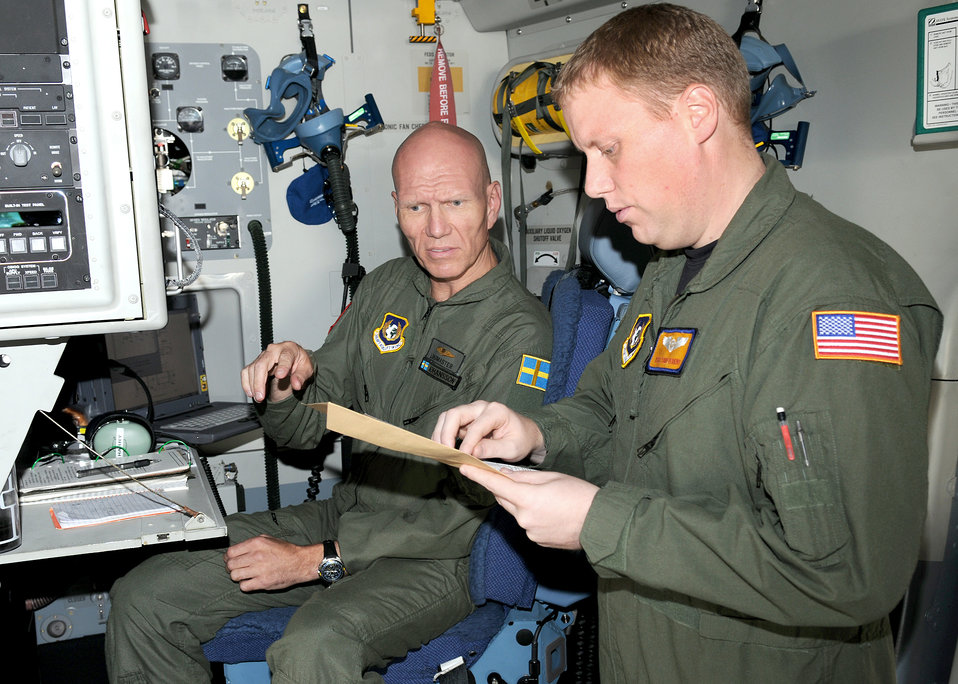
New unit, new way of doing international business

Swedish 1st Lt. Harry Johansson and U.S. Air Force Staff Sgt. Todd Perkins, C-17 Globemaster III loadmasters assigned to the Heavy Airlift Wing at Papa Air Base, Hungary, go over a preflight checklist Aug. 18 prior to departing Ramstein Air Base, Germany. The HAW, comprising 12 nations, operates independently of NATO's military command and was created to help nations meet global reach commitments.